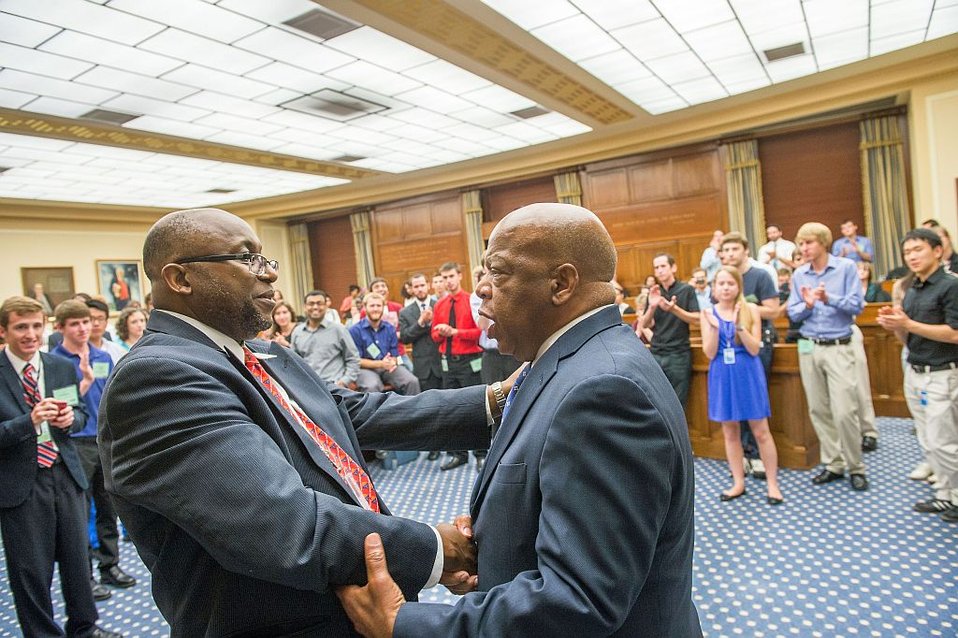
Congressman Lewis and Deputy Director May

Georgia Congressman John Lewis, Dem. (right) welcomes NIST Deputy Director Willie May (left) and 2013 Summer Undergraduate Research fellows to Capitol Hill in the House Science Committee Hearing Room.